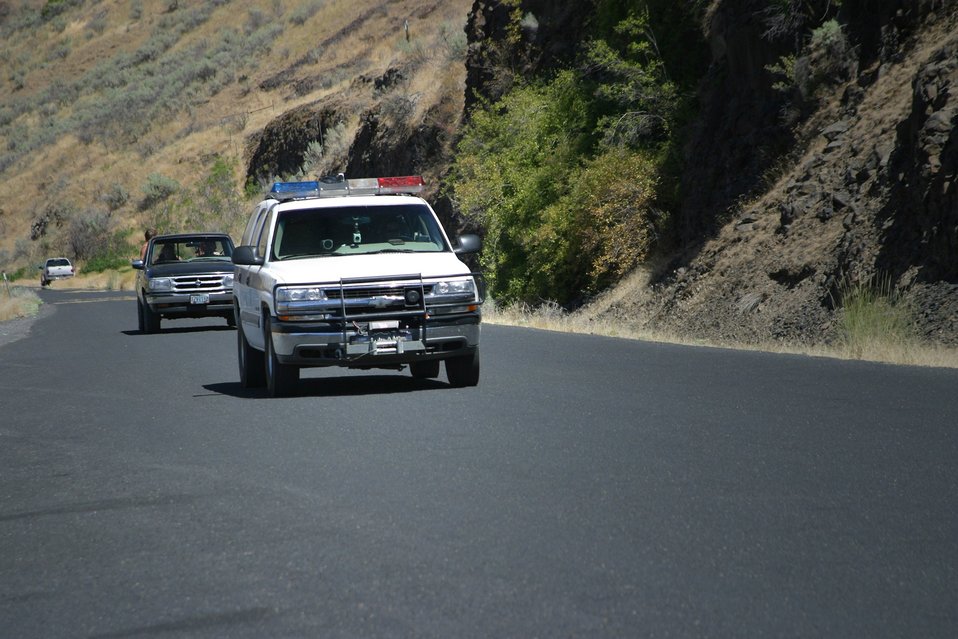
BLM Rangers patrol the Lower Deschutes River.